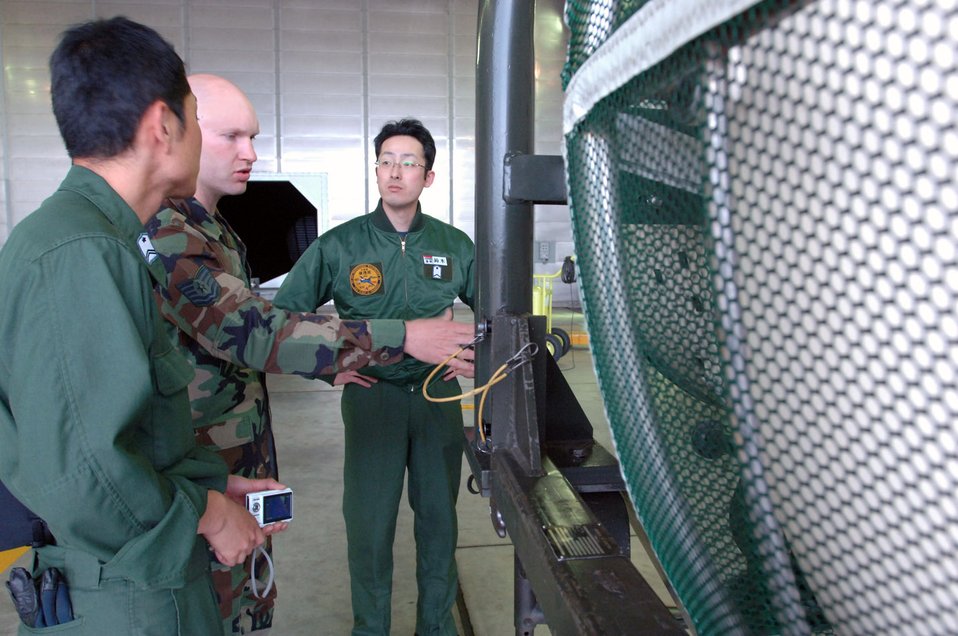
U.S., Japan forces join together for bilateral exchange

Tech. Sgt. Marcus Sydow briefs Japanese Air Self Defense Force Tech. Sgt. Takuma Ota (left) and Staff Sgt. Masanobu Suzuki (right) about 35th Fighter Wing equipment May 15 at Misawa Air Base, Japan. Sergeant Sydow is the propulsion shop nonpowered age NCO in charge.